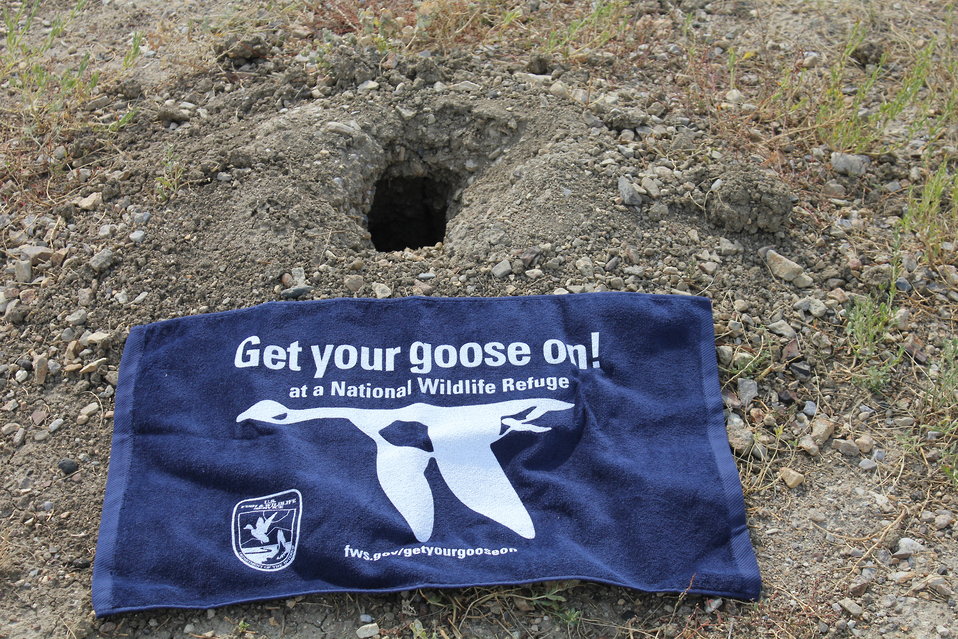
Black-footed Ferret Burrow

This endangered black-footed ferret decided not to leave his burrow at Charles M Russel NWR to Get His Goose On!

:0(